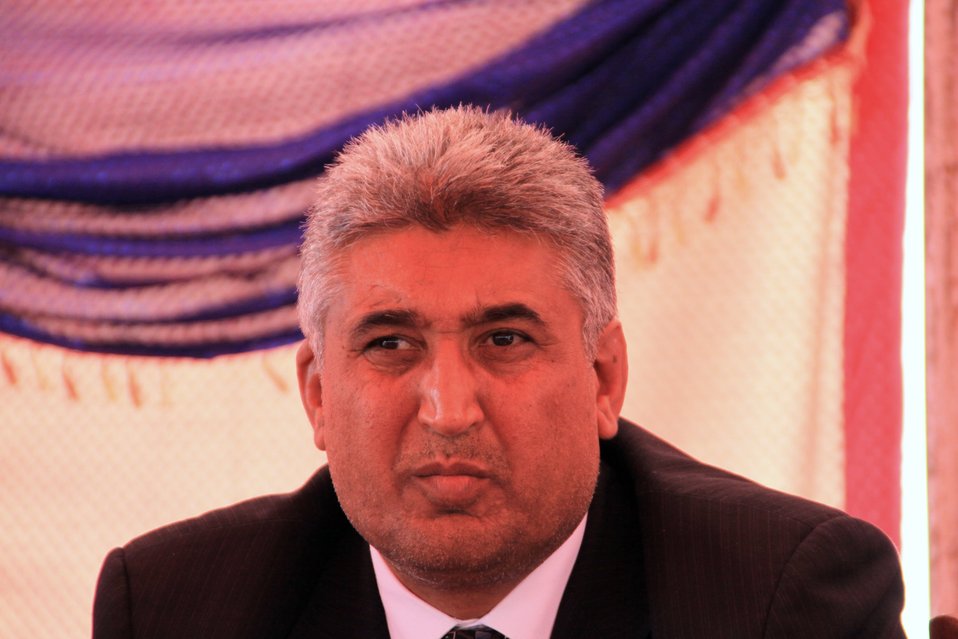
Badam Bagh Farm